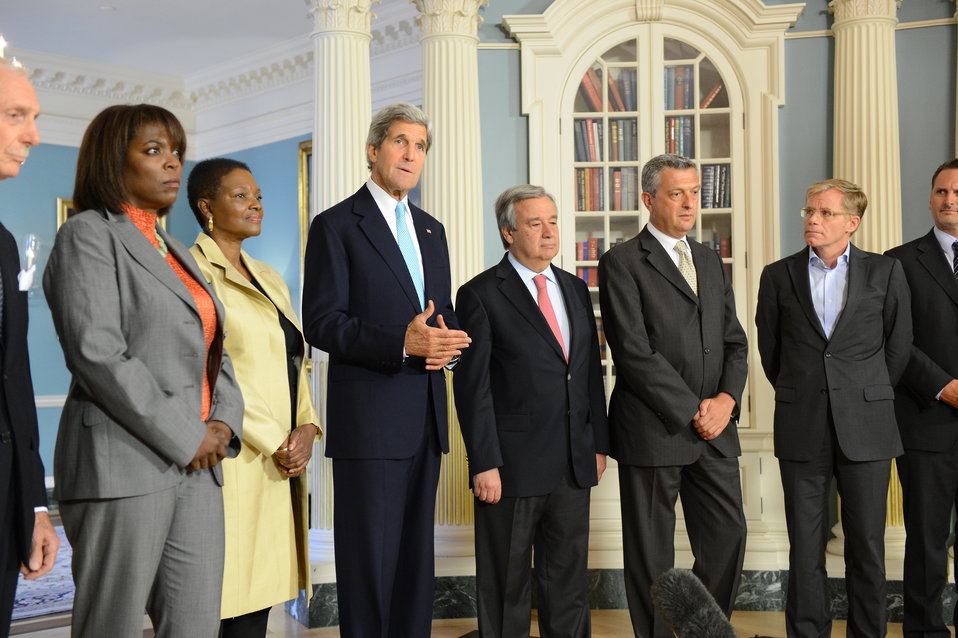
Secretary Kerry and International Humanitarian Agency Heads Address Reporters

U.S. Secretary of State John Kerry and International Humanitarian Agency Heads address reporters at the U.S. Department of State in Washington, D.C., on July 23, 2013.